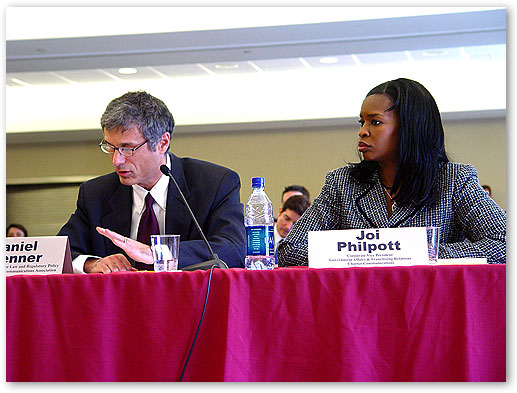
Daniel Brenner, Senior Vice President for Law and Regulatory Policy, National Cable and Telecommunications Association. Ms. Joi Philpott, Corporate Vice President of Government Affairs and Franchising Relations, Charter Communications.